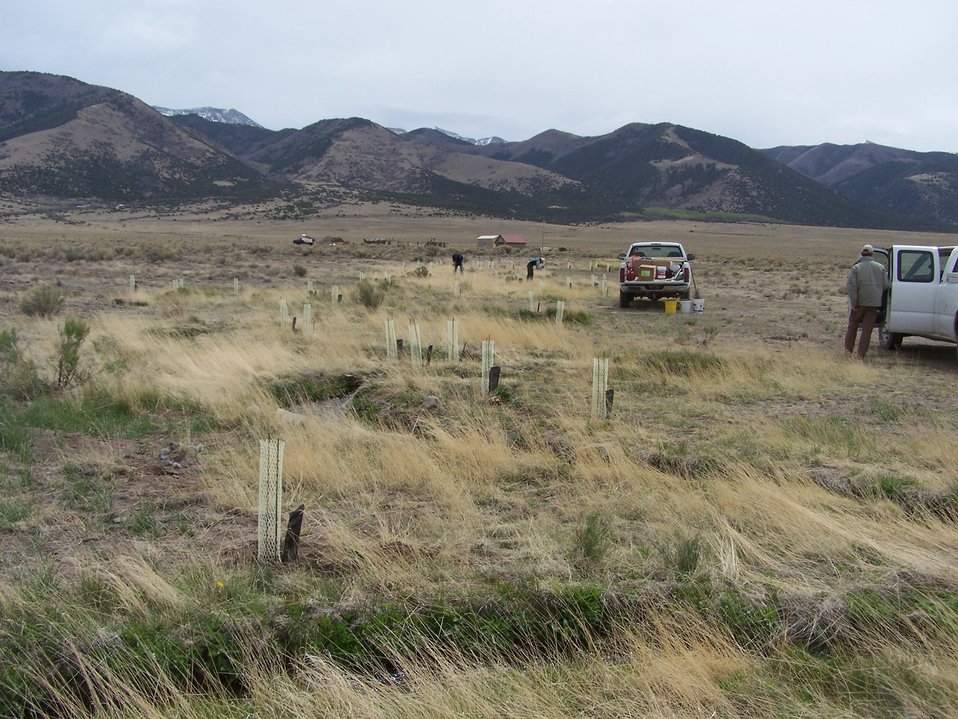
Native Shrub Planting

Contractors planted native woody vegetation on a restored stream in Sewatch County, Colo.

The project was funded by the U.S. Fish and Wildlife Service’s Partners for Fish and Wildlife program, whose habitat restoration projects are extraordinary engines for the U.S. economy. Restoration Returns: The Contribution of Partners for Fish and Wildlife Program and Coastal Program Projects to Local U.S. Economies finds that, in working directly with partners to implement vital on-the-ground habitat restoration, Service programs created more than 3,900 jobs in Fiscal Year 2011, generating a total economic stimulus of $327.6 million.

The “restoration economy” is a subset of green jobs that includes such industries as heavy equipment providers and operators, plant nurseries, landscape architects, and construction companies, among other firms.

Download the entire report at: www.fws.gov/home/restoration returns.html.